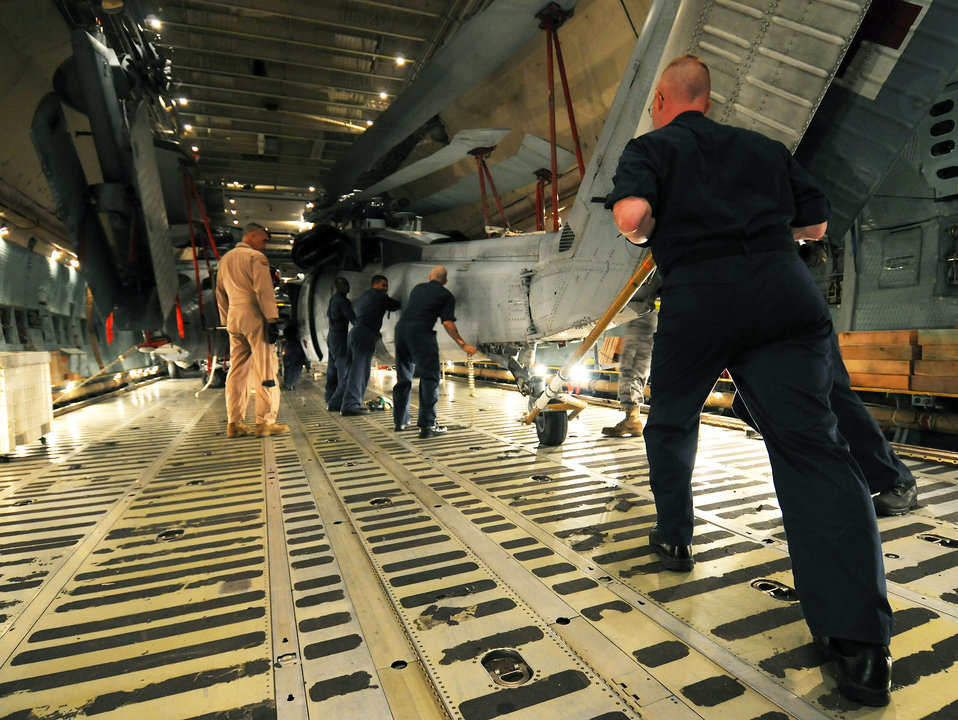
Just the right fit

Senior Master Sgt. Randall Shafer, a loadmaster with the West Virginia Air National Guard's 167th Airlift Wing, monitors as Sailors from Helicopter Sea Combat Squadron TWO-FIVE at Guam's A.B. Won Pat International Airport position an MH-60S Knighthawk March 13 inside a C-5 Galaxy on the flightline at Andersen Air Force Base, Guam. The Air Force aircrew and the Navy sailors loaded three MH-60S and two SH-60H Sea Hawk helicopters inside the cargo aircraft for transport to Naval Air Station North Island in San Diego.